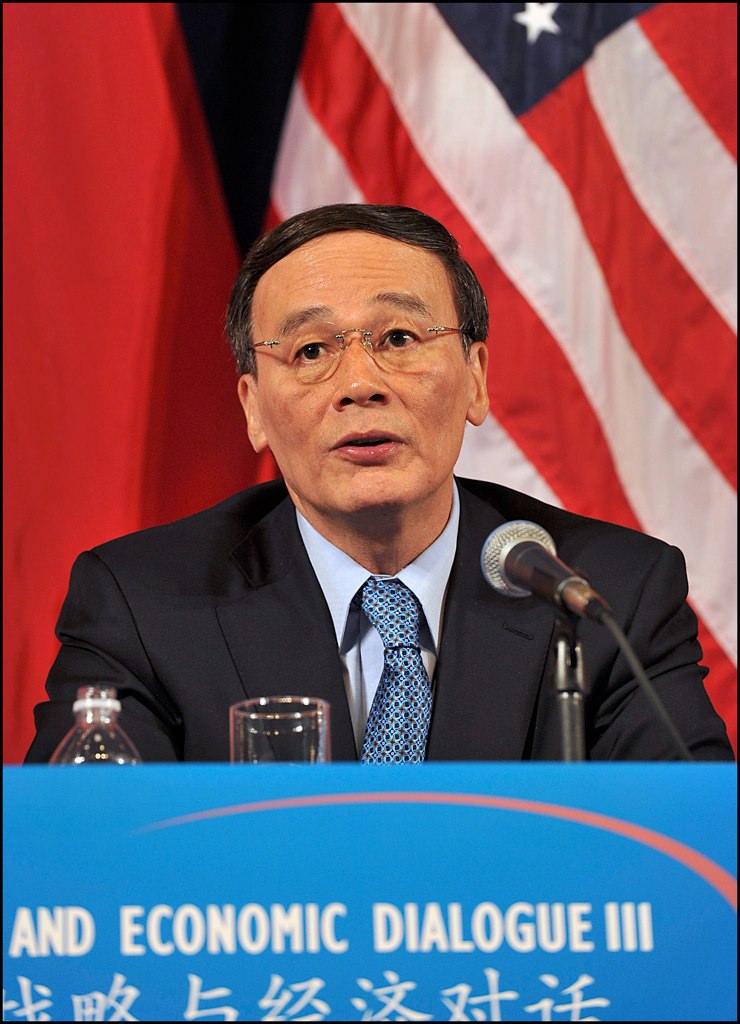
U.S.-China Strategic and Economic Dialogue

Secretary Geithner's S&ED counterpart, Chinese Vice Premier Wang Qishan delivers a statement at the closing session.